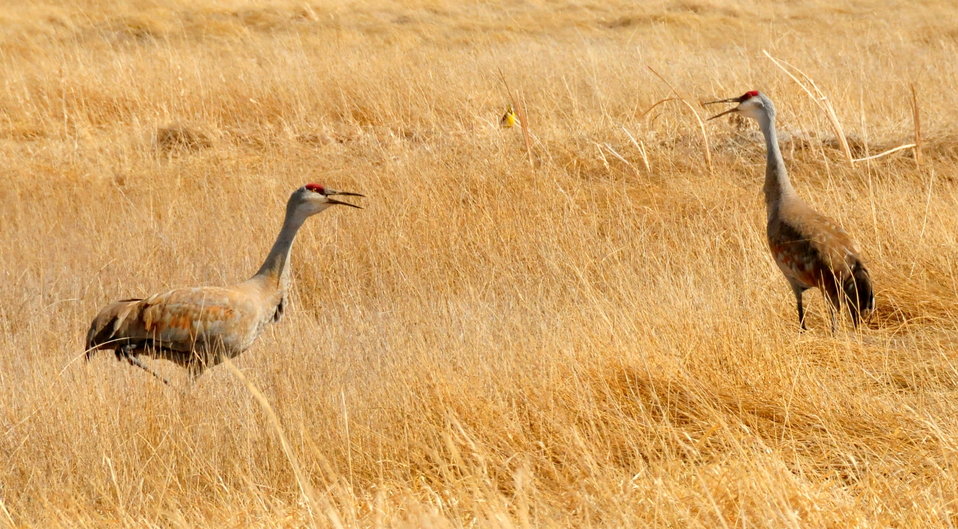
Sandhill Crane Pair Courting on Seedskadee NWR

A pair of sandhill cranes court in a wet meadow on Seedskadee NWR in early spring. The pair later nested here and raised 2 colts.